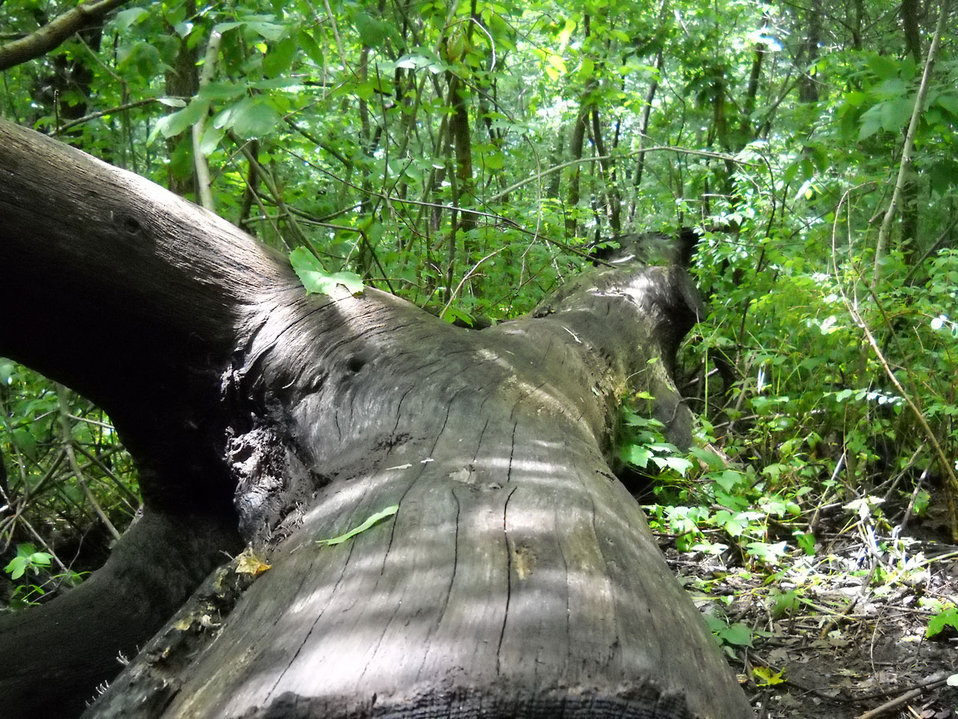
Fallen tree

A view from the stump of a fallen tree.